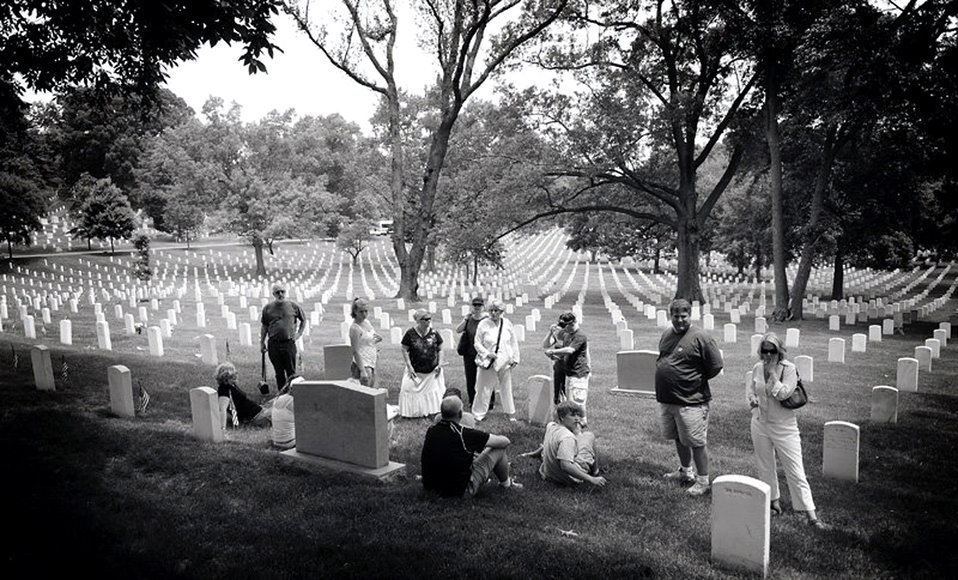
Remembering Lieutenant Jones: An Airman's search for a hero's family

Familiy members of 1st Lt. George Jones gather at his burial site for a 10-year reunion May 28 at Arlington National Cemetery in Washington. Formerly missing in action, Lieutenant Jones crashed July 7, 1967, in the South China Sea. His remains were returned to his family and interred in 1997. Staff Sgt. Gary Ritter joined the family as a special guest. Sergeant Ritter had worn a POW/MIA bracelet with Lieutenant Jones' name on it for 19 years. Sergeant Ritter is a combat arms instructor at the Expeditionary Center at Fort Dix, N.J.